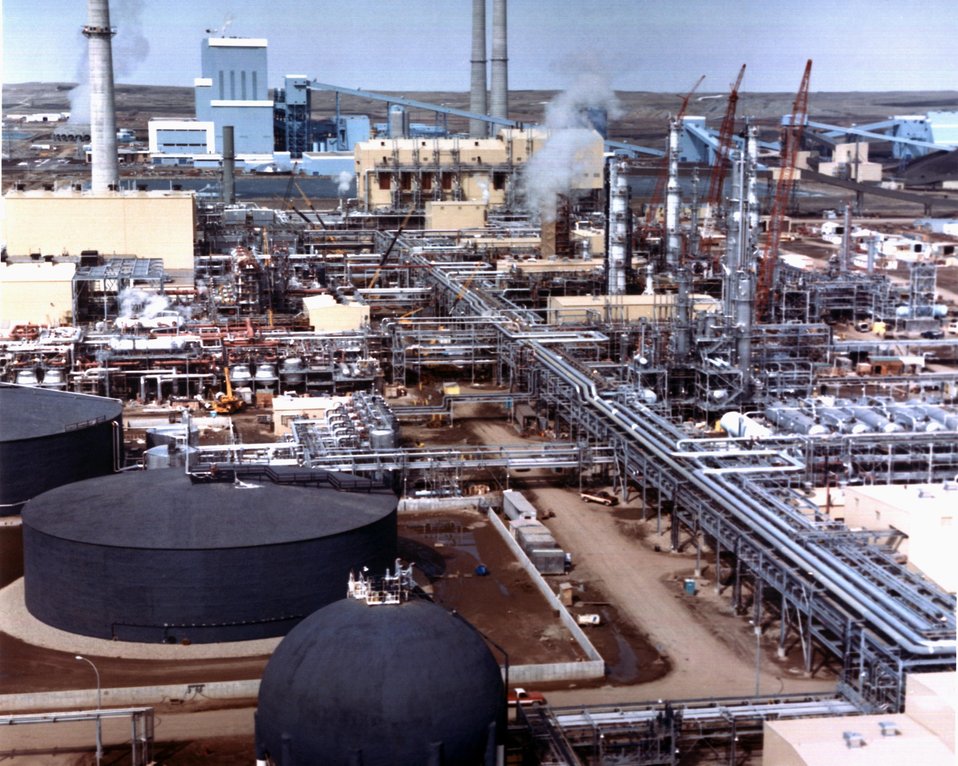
CLOSE-UP AERIAL OF THE GREAT PLAINS PROJECT, SHOWING AMMONIA(FOREGROUND) AND WATER (MID-FOREGROUND LEFT) STORAGE TANKS.

THE GREAT PLAINS COAL GASIFICATION PLANT WILL PRODUCE AN AVERAGE OF 125 MILLION CUBIC FEET PER DAY OF SYNTHETIC HIGH-BTU GAS. THIS GAS, A DIRECT SUBSTITUTE FOR NATURAL GAS, IS TO BE MARKETED THROUGH AN INTERSTATE NETWORK OF GAS PIPELINES. APPROXIMATELY 14,000 TONS OF LIGNITE WILL BE FED EACH DAY INTO 12 LURGI GASIFIERS (2 ADDITIONAL GASIFIERS WILL BE KEPT ON STANDBY). GAS EXITING THE GASIFIERS WILL BE COOLED, CLEANED OF SULFUR, AMMONIA, AND OTHER IMPURITIES, THEN UPGRADED TO A PIPELINE QUALITY SYNTHETIC NATURAL GAS. THE LURGI PROCESS WILL USE THE LARGER-SIZED COAL FROM THE PLANT'S COAL CRUSHING OPERATION WHILE SOME 8,000 TONS PER DAY OF THE SMALLER SIZE COAL WILL BE SOLD TO AN ADJACENT STEAM ELECTRIC GENERATING PLANT. THE GREAT PLAINS PLANT WILL ALSO PRODUCE 93 TONS PER DAY OF AMMONIA AND 85 TONS PER DAY OF SULPHUR.